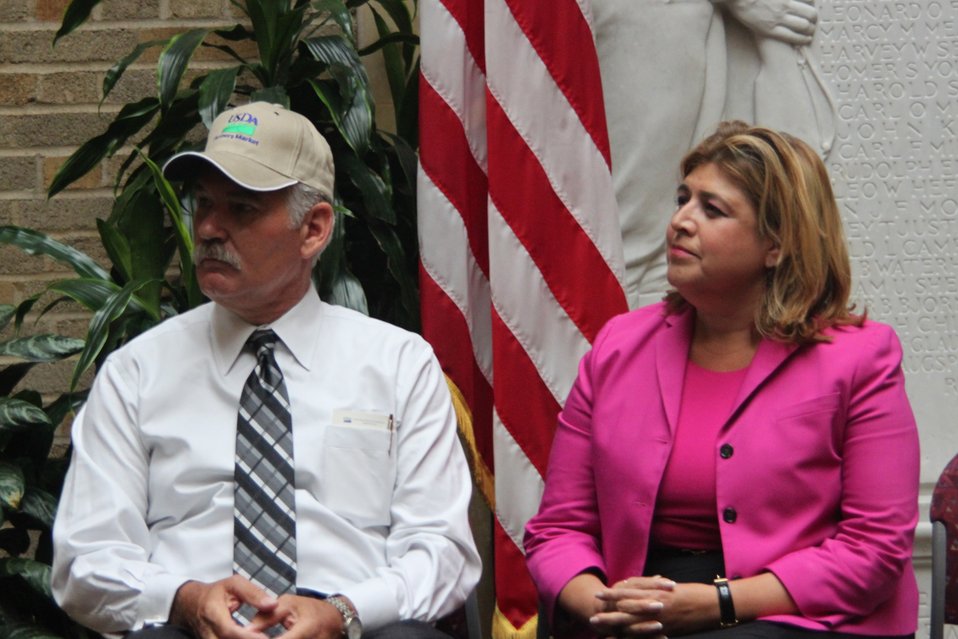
Scuse and Alonzo

Agriculture Acting Deputy Secretary Michael Scuse and U.S. Department of Agriculture (USDA) Agricultural Marketing Service (AMS) Administrator Alonzo listen to Washington Redskins player Reed Doughty speak at the opening of USDA's Farmers Market on Friday, Jun. 7, 2013.